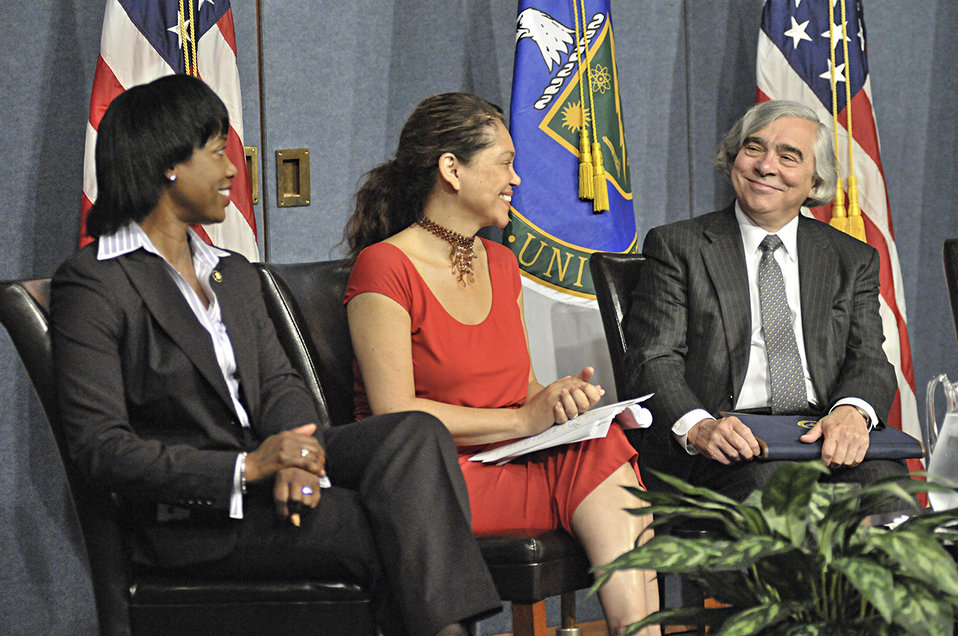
Launching the Minorities in Energy Initiative

Director Dot Harris joins event moderator Sandra Guzman, award winning journalist and author, and Secretary Ernest Moniz. The Office of Economic Impact and Diversity kicked off the Minorities in Energy Initiative on September 24, 2013, with Secretary Ernest Moniz.